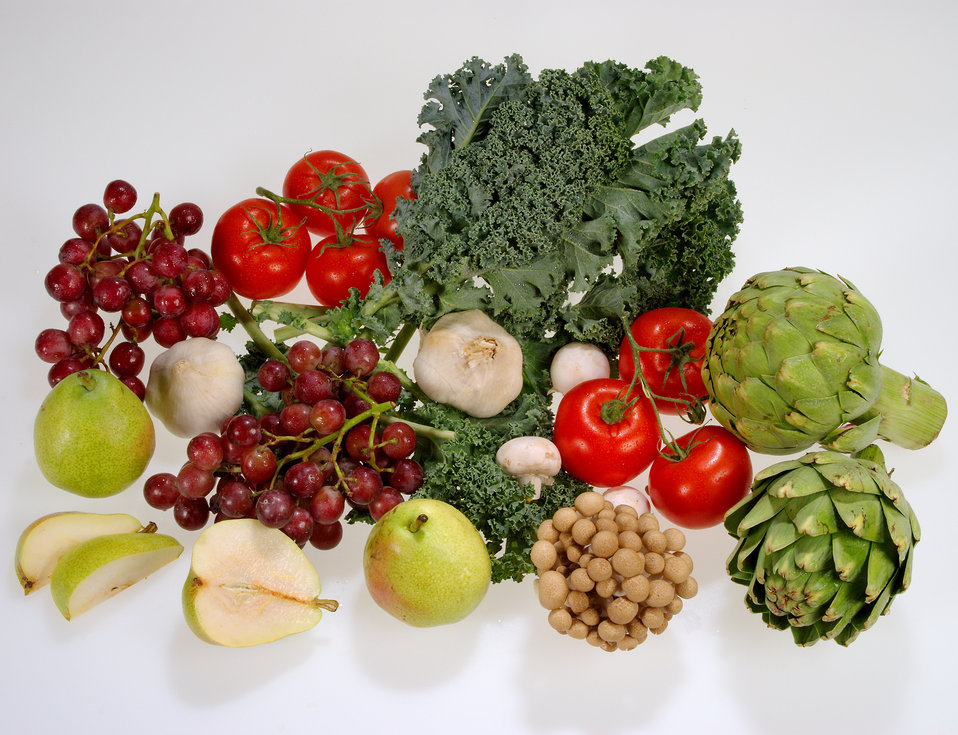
Fruits and vegetables

Included in this grouping of fruits and vegetables were two bunches of red grapes, red tomatoes, two garlic cloves, two artichokes, three Anjou pears, leafy kale, a bunch of beech mushrooms, and a few white mushrooms.